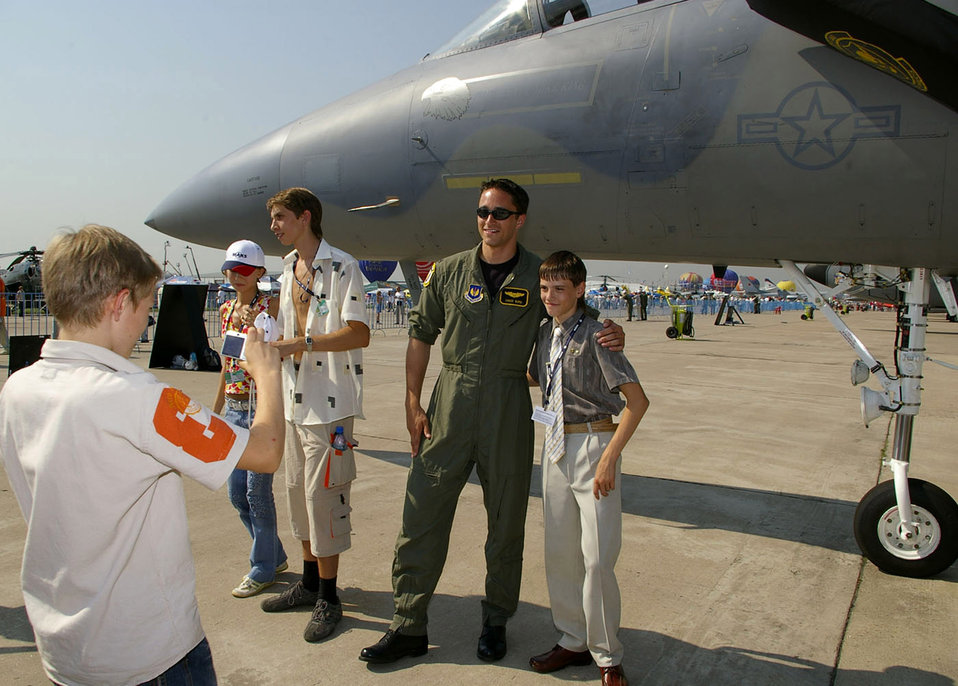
Airmen in Moscow reach out to children

1st Lt. Chuck Bursi poses for photos with Moscow children Aug. 23 at the Moscow International Air Show in Zhukovsky, Russia. The children, ages 6 to 16, visited the show as part of a program called Moscow Open Festival for Children's Creativity. Approximately 60 children from nearby towns attended. Leading up to the festival, the children either made models or did artwork in four categories: Aviation, space craft, handcrafts and artwork. The top three winners in each group received prizes, and Airmen presented the children with additional aviation materials such as models of Air Force aircraft, pens, pencils and pins. Lieutenant Bursi is a pilot with the 493rd Fighter Squadron at Royal Air Force Lakenheath, England.